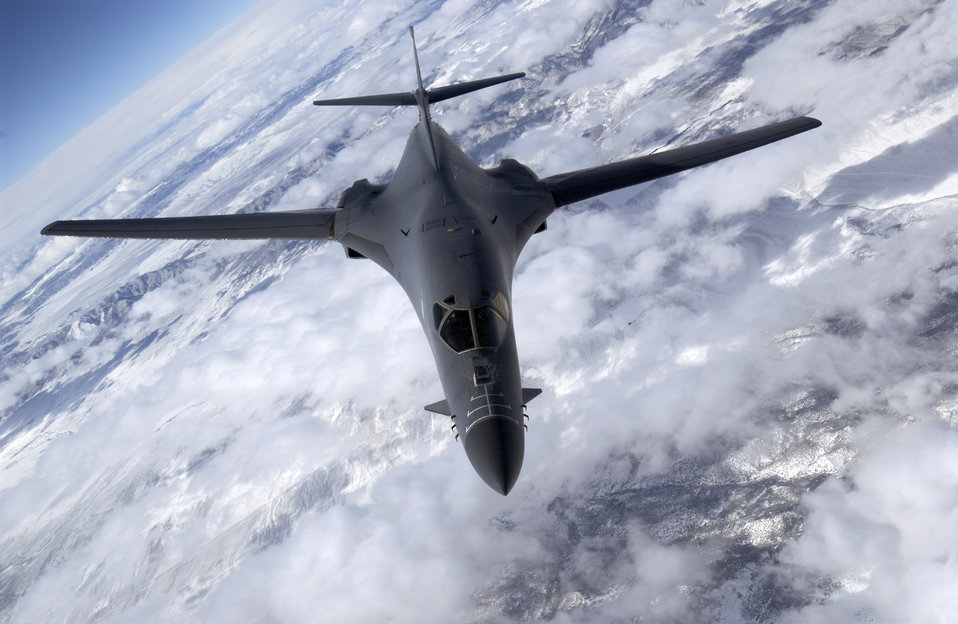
Bomber away

AIRBORNE -- The B-1B Lancer cruises above the clouds. A B-1B test program that combined testing of software upgrades, along with integrating the 500-pound Joint Direct Attack Munition wrapped up here Feb. 24.